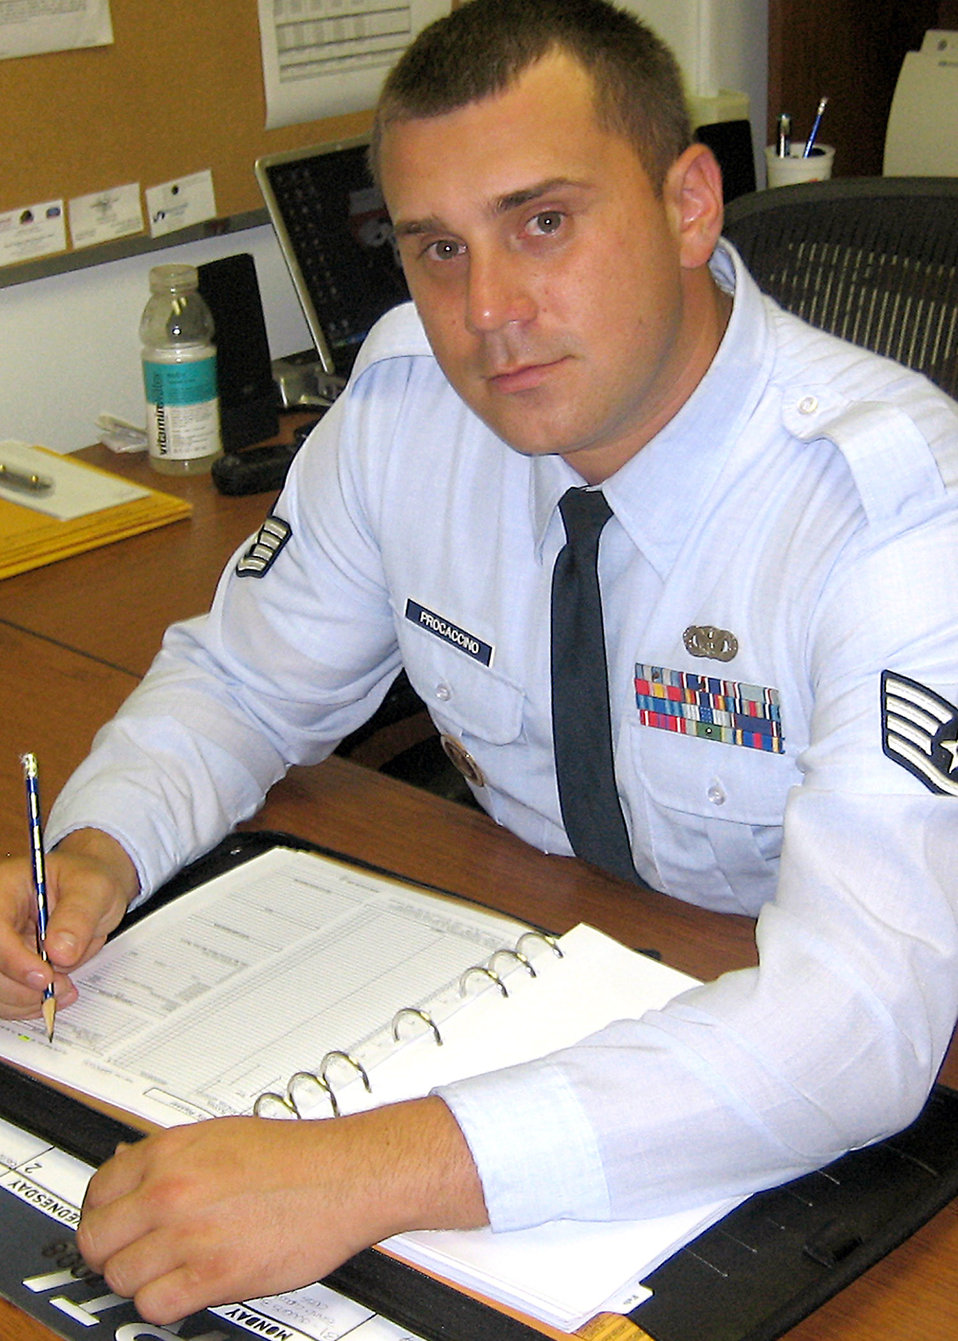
Miami-based recruiter saves life of shooting victim

Staff Sgt. Jason Procaccino, a 333rd Recruiting Squadron Miami-based recruiter and former security forces member, helped save the life of a Miami shooting victim March 19.